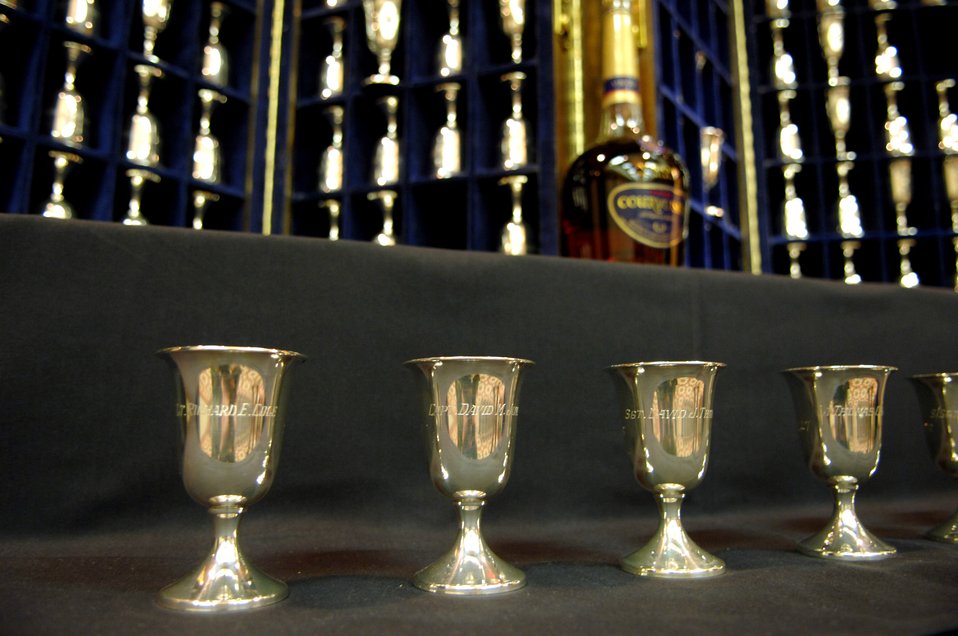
Raider goblet ceremony

Silver goblets are positioned for a Doolittle Raider toast honoring fallen Raiders April 18 in San Antonio, commemorating the 65th Anniversary of the Doolittle Tokyo Raid in 1942. There are 80 goblets representing all 80 Doolittle Raiders. When a Raider dies, his goblet is turned over in the case. When there are but two Raiders left, the two men will open a bottle of cognac, vintage 1896 (the year Doolittle was born) and give a final toast to their departed comrades. Fourteen of the 80 Raiders are still alive.